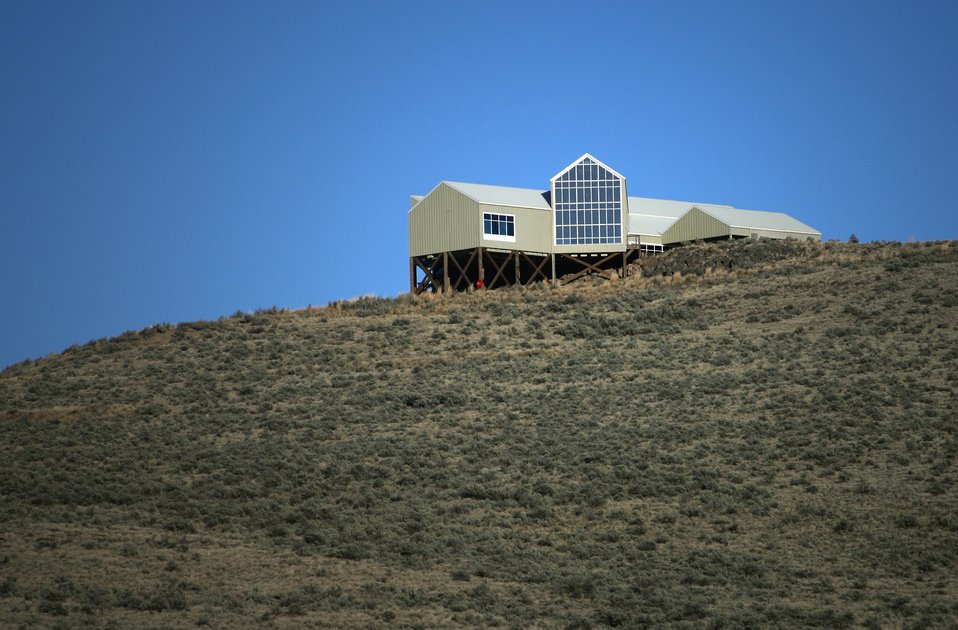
Early evening view of the NHOTIC from the Oregon Trail just below the Center.